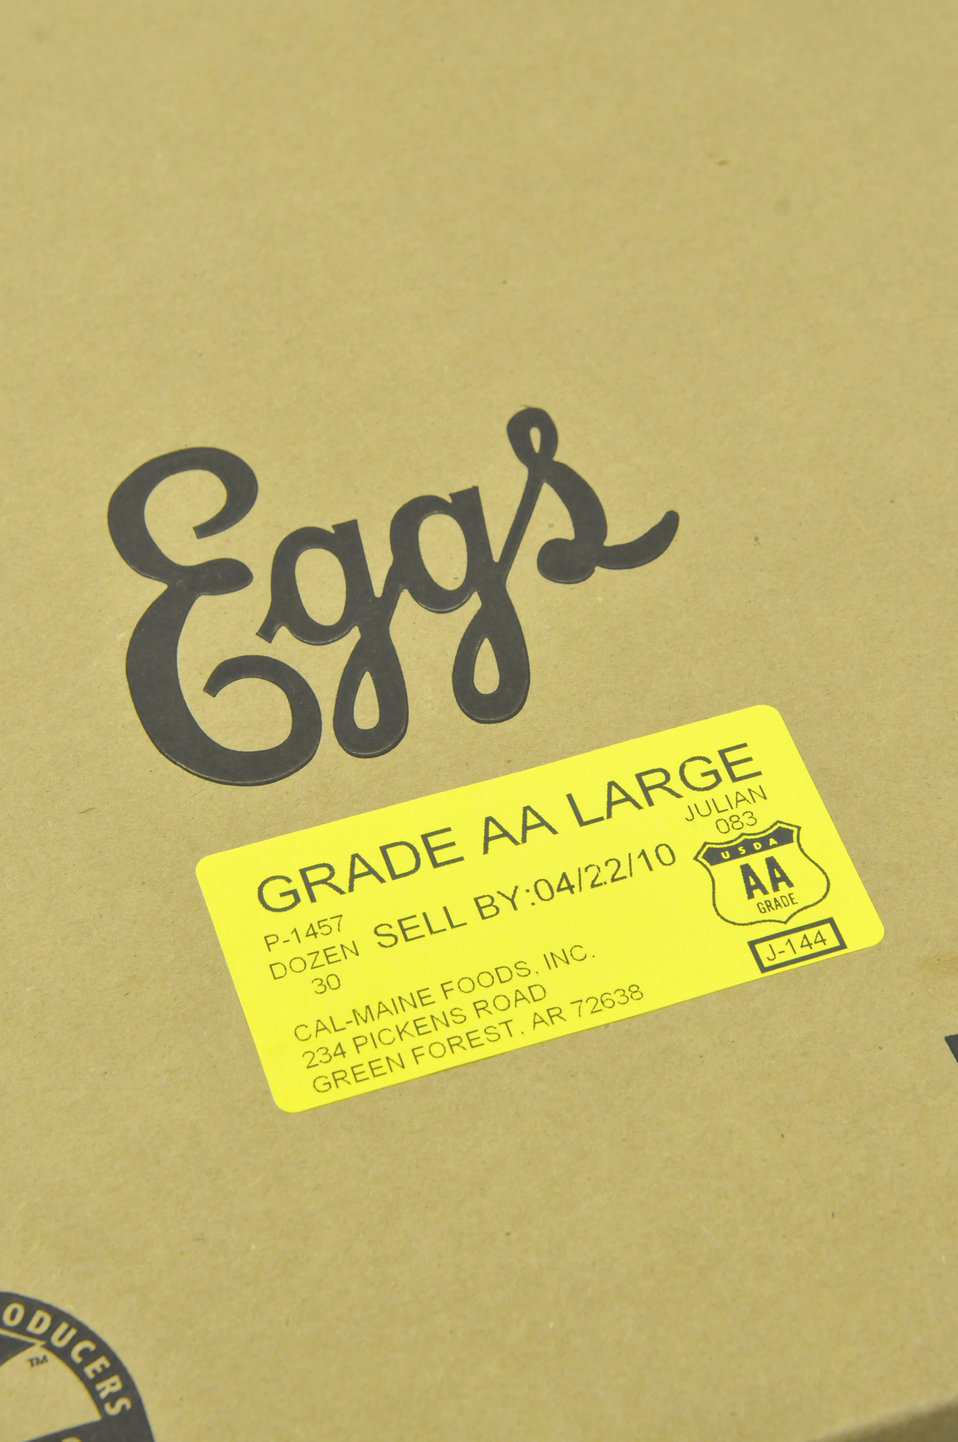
Shell eggs are graded at Cal-Maine Foods Inc. in Green Forest, Arkansas by the U.S. Department of Agriculture (USDA) Agricultural Marketing Service (AMS) on March 24, 2010. Shell eggs are produced on farms with a few thousand laying chickens or in large laying complexes with over a million layers. All shell eggs are eligible for the grading and certification services provided by the USDA AMS Poultry Programs.